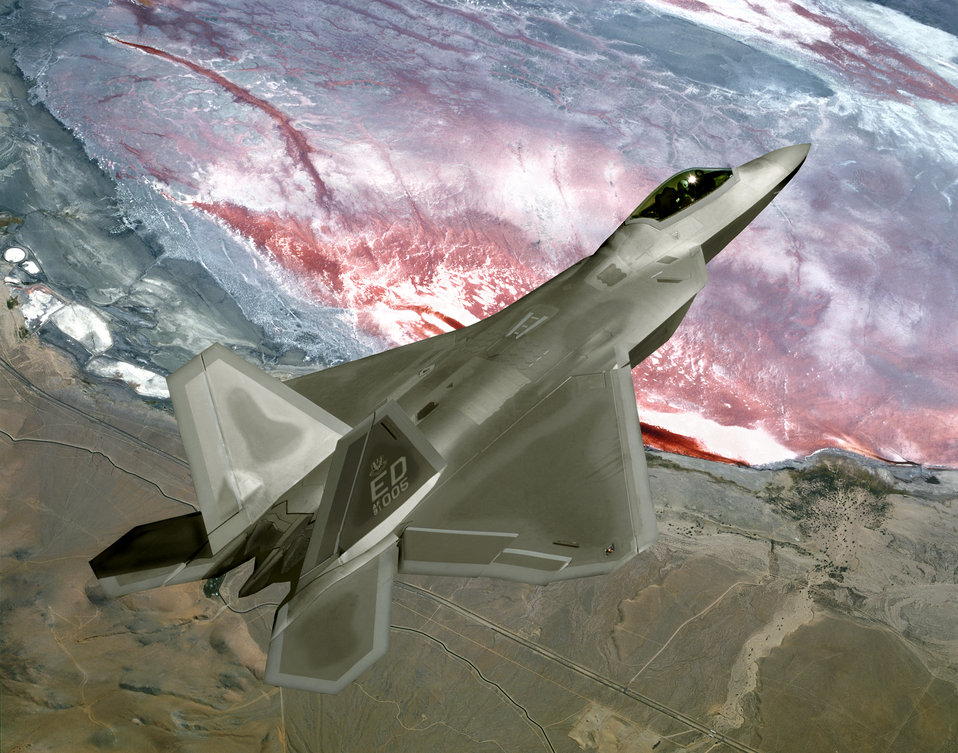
Raptor

OVER CALIFORNIA -- An F/A-22 Raptor flies a training mission here.